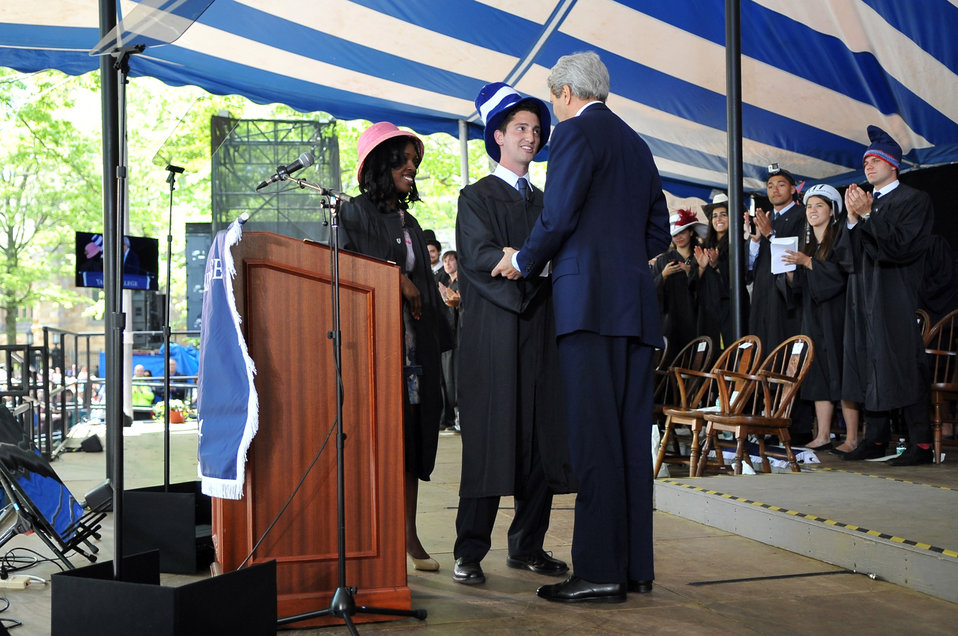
Secretary Kerry Thanks Former Intern Rubin For Class Day Introduction at Yale University

U.S. Secretary of State John Kerry shakes the hand of his former State Department intern Josh Rubin, who was among the students who invited the 1966 graduate to address their fellow seniors during Class Day ceremonies on the campus in New Haven, Connecticut, on May 18, 2014.